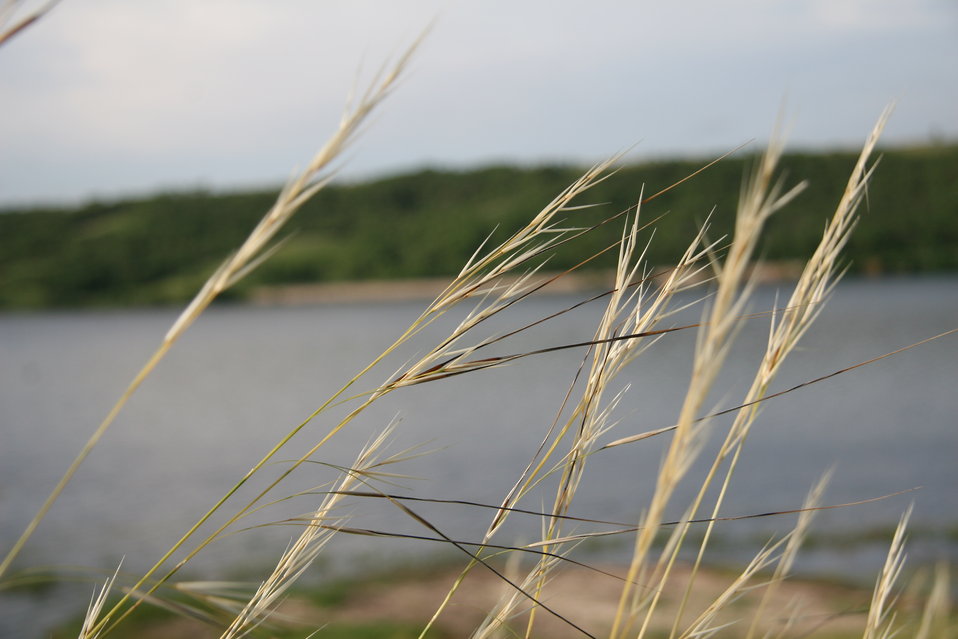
Grasses at Des Lacs National Wildlife Refuge

Need and thread Grass surrounding Des Lacs Lake at Des Lacs National Wildlife Refuge.